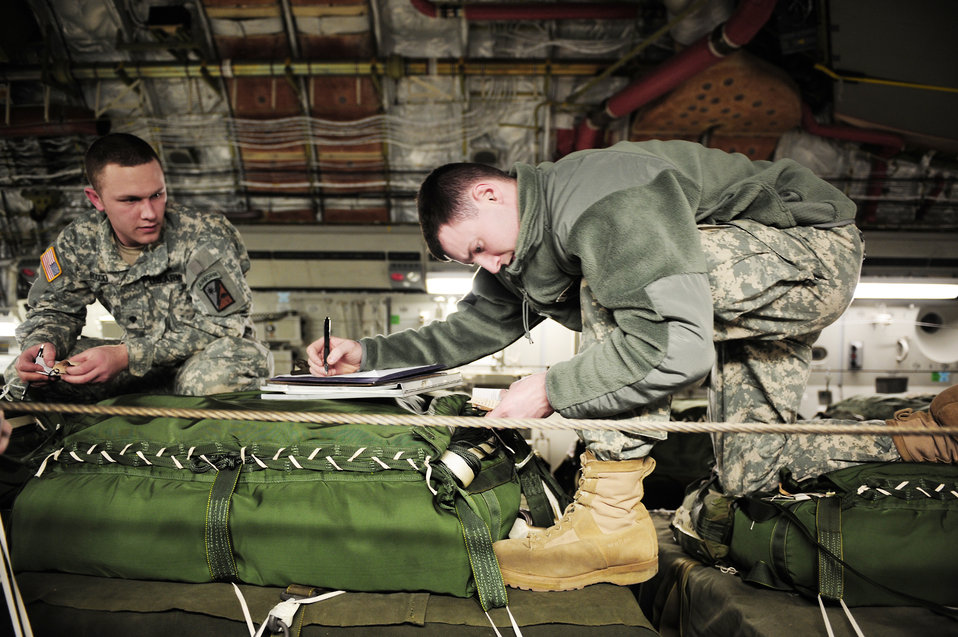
Meals, water delivered for Haiti relief

U.S. Army Specialists Jordan Markelwitz (right) and Daniel Rocco review the load plan of a C-17 Globemaster III from Charleston Air Force Base, S.C., before an air delivery mission in support of Operation Unified Response Jan. 21, 2010. The aircrew, assigned to the 15th Airlift Squadron at Charleston AFB, delivered 40 bundles totaling 67,800 pounds of Meals, Ready to Eat and bottled water. The Soldiers are assigned to the 11th Quartermaster, 189th Combat Sustainment Support Brigade at Fort Bragg, N.C.